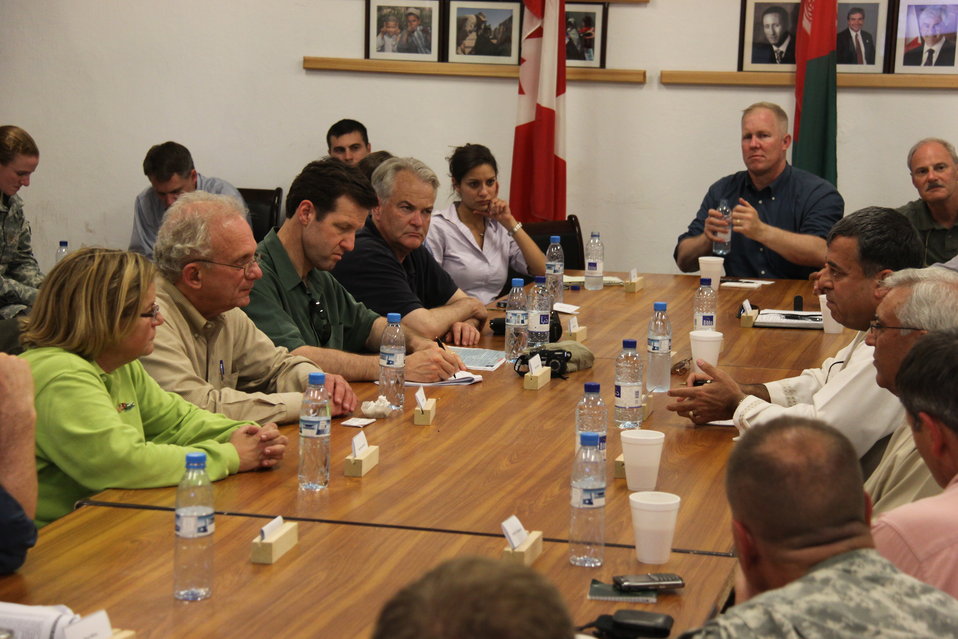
Meeting with Local Leaders in Kandahar